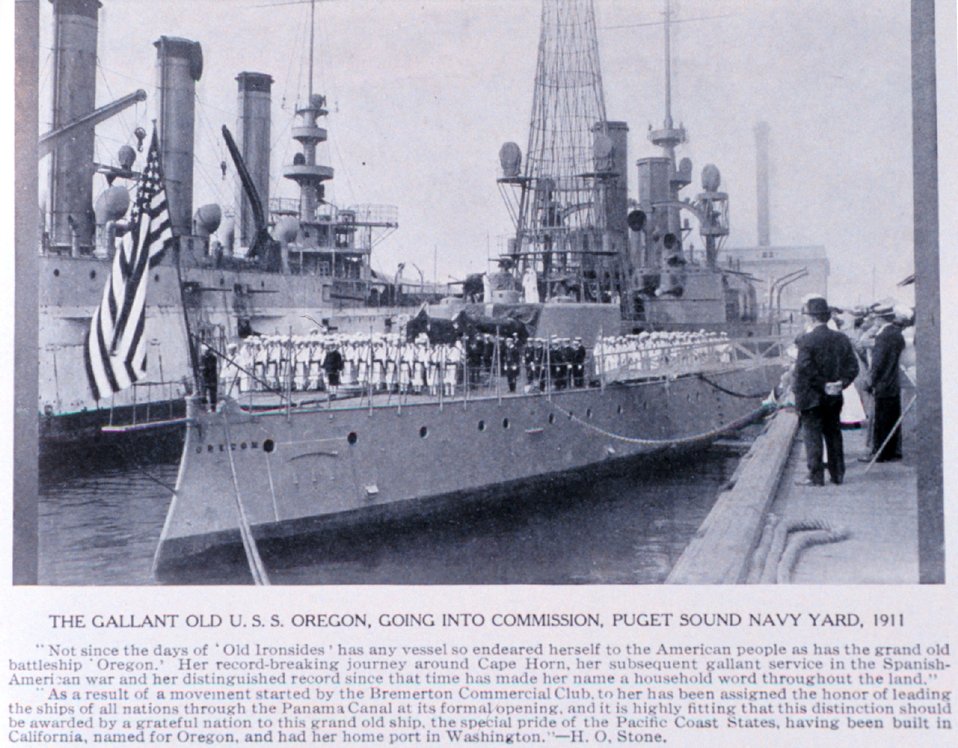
'The Gallant Old U.S.S OREGON, Going into Commission, Puget Sound Navy Yard, 1911. In: 'Puget Sound and Western Washington Cities-Towns Scenery', by Robert A. Reid, Robert A. Reid Publisher, Seattle, 1912. P. 141.